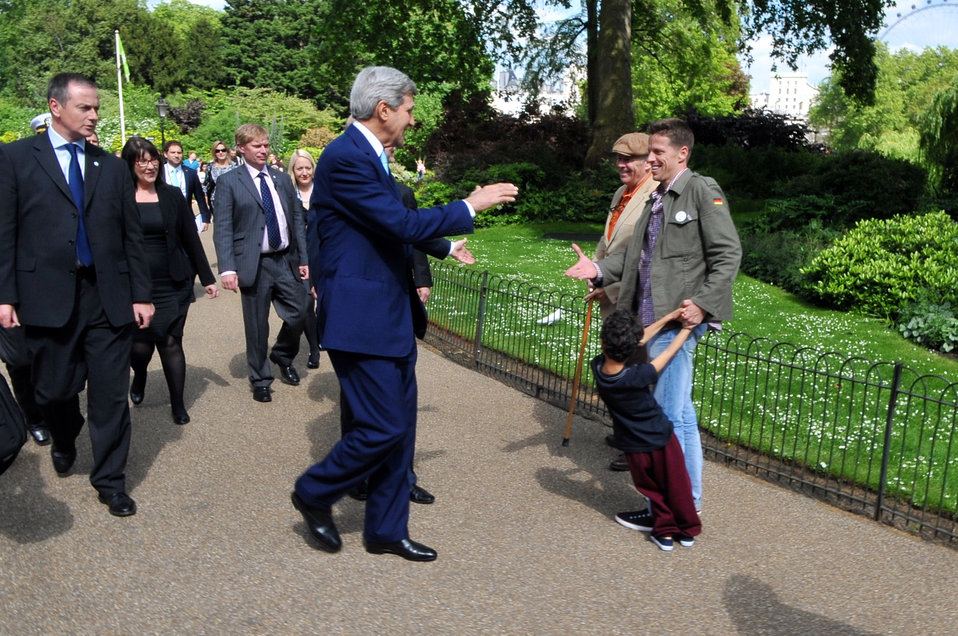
Secretary Kerry Greets American Tourists in London

U.S. Secretary of State John Kerry stops to shake hands with a group of American tourists who called out to him as he took a walk with British Foreign Secretary William Hague in St. James Park in London on May 15, 2014.